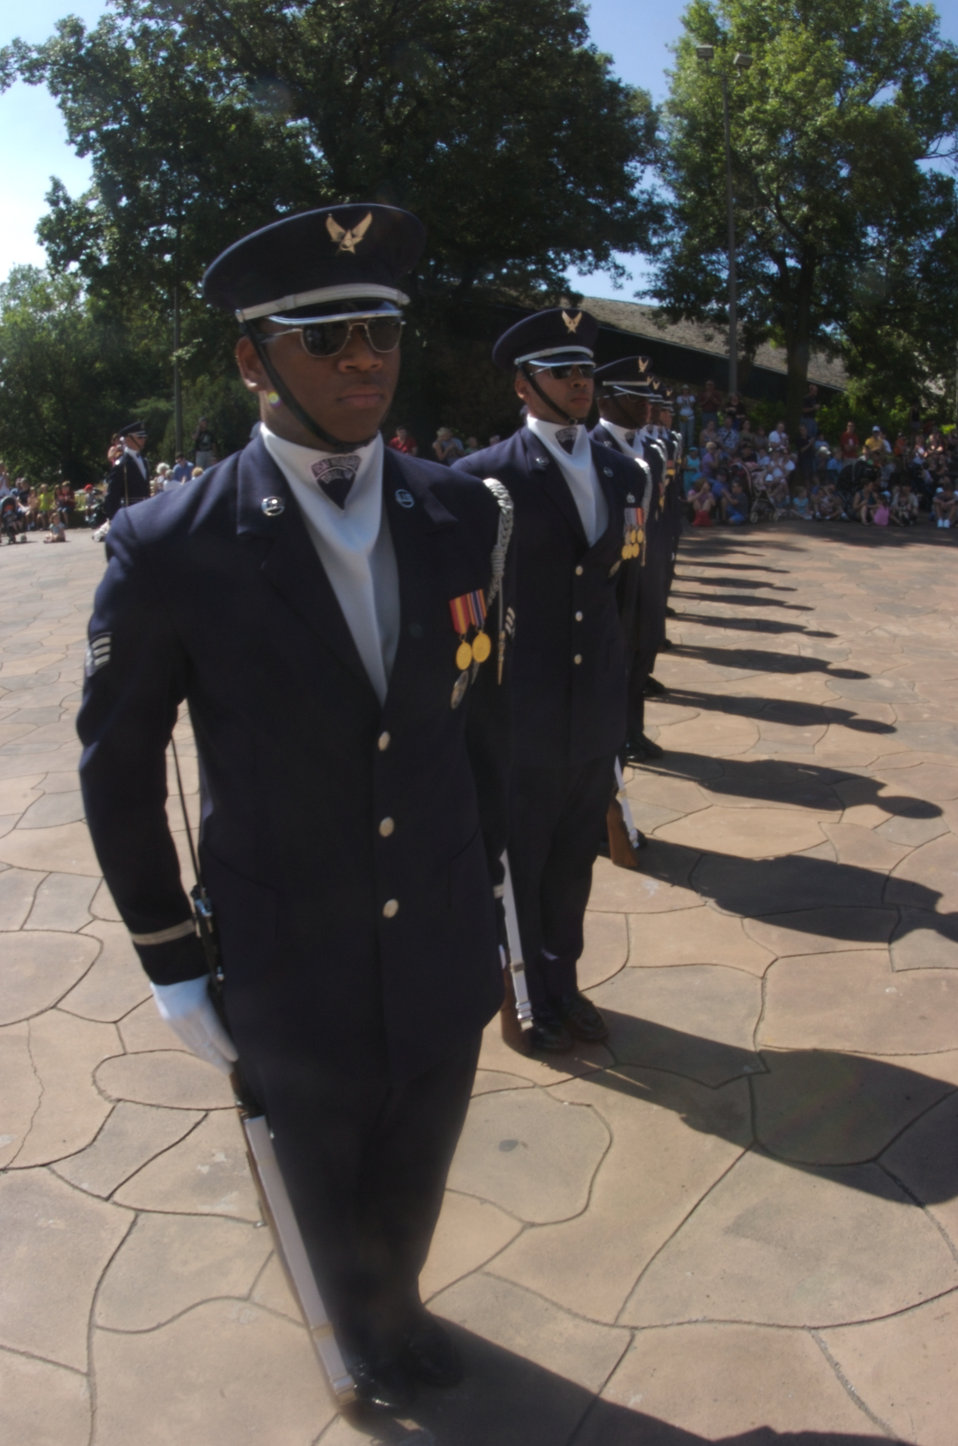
Air Force Week in the Heartland reaches out to Omaha zoo

Air Force Honor Guard drill team members perform Aug. 12 for visitors of the Henry Doorly Zoo in Omaha, Neb. Zoo visitors also had the chance to see the Do Something Amazing display featuring an F-16 Fighting Falcon, a motion simulator and video simulators during Air Force Week in the Heartland.